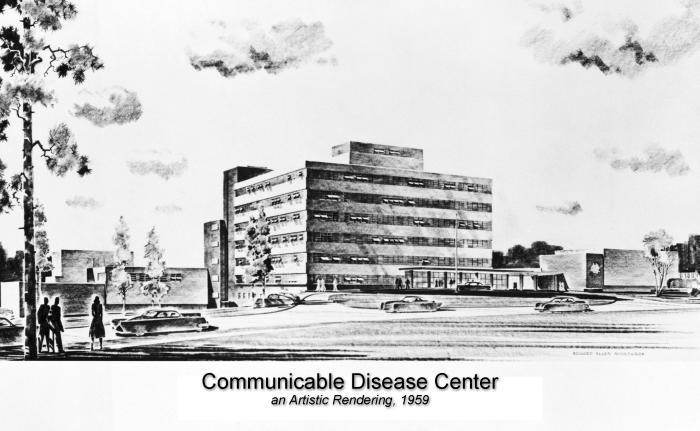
This was a 1959 photograph of an artist's conceptual rendering of the Centers for Disease Control's Building 1, overlooking Clifton Road in Atlanta, Georgia.